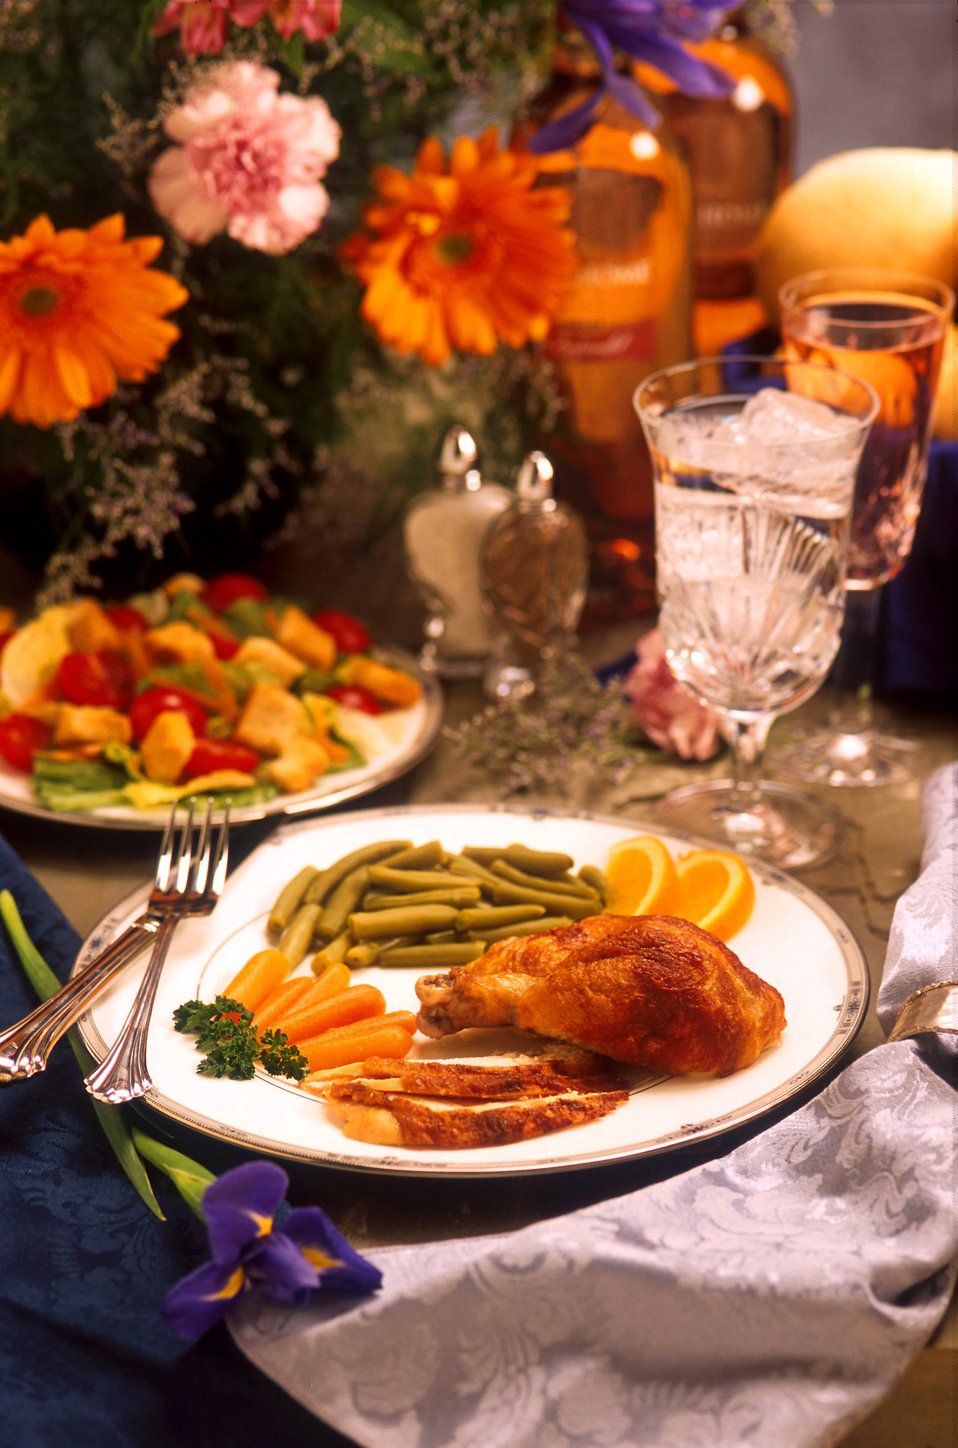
A healthy meal of baked chicken, carrots, green beans and orange slices sits on a plate.